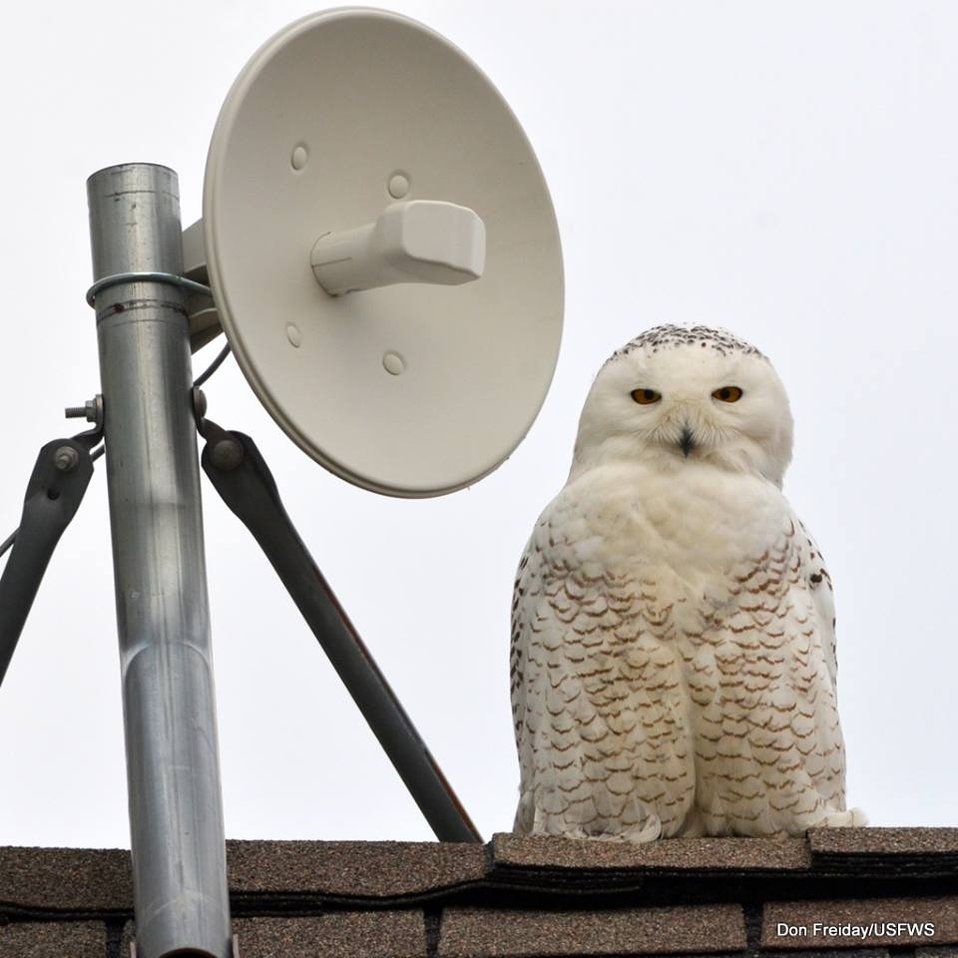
Edwin B. Forsythe Refuge

Perching next to the receivor for the refuge's osprey cam. January 2014.